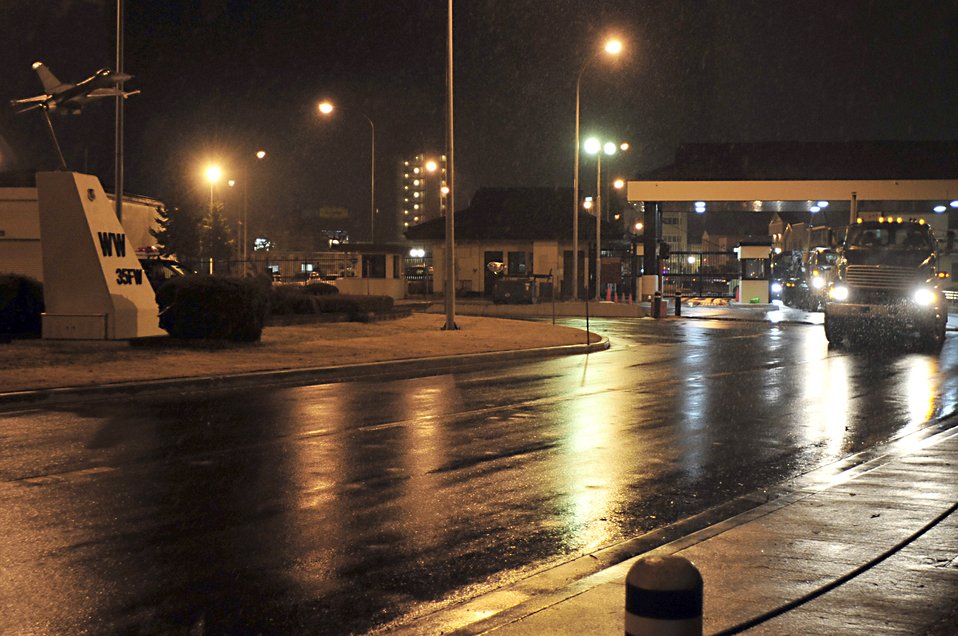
Airmen returns from delivering U.S. AID workers and equipment

MISAWA AIR BASE, Japan -- A convoy of trucks and buses enters through the base?s main gate Mar. 15. The convoy traveled from Sendai, Japan after dropping off U.S Agency for International Development search and rescue teams and equipment in support of Operation Tomodachi.